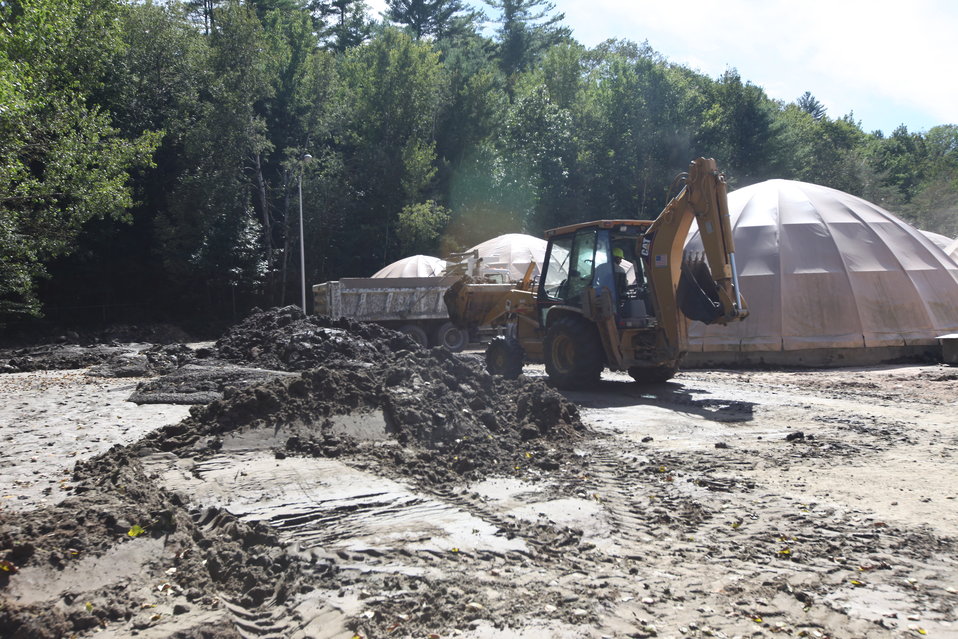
Storm damage relief at White River NFH

Heavy equipment operators came from other USFWS stations to help clean up.